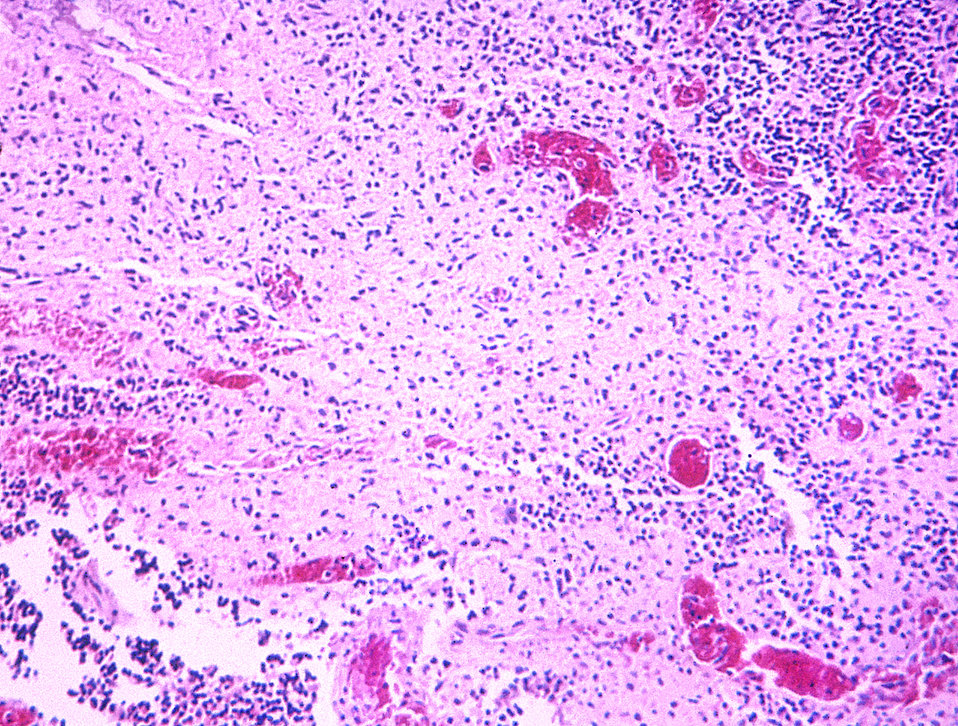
Histopathology of the gallbladder in a case of Typhoid fever.